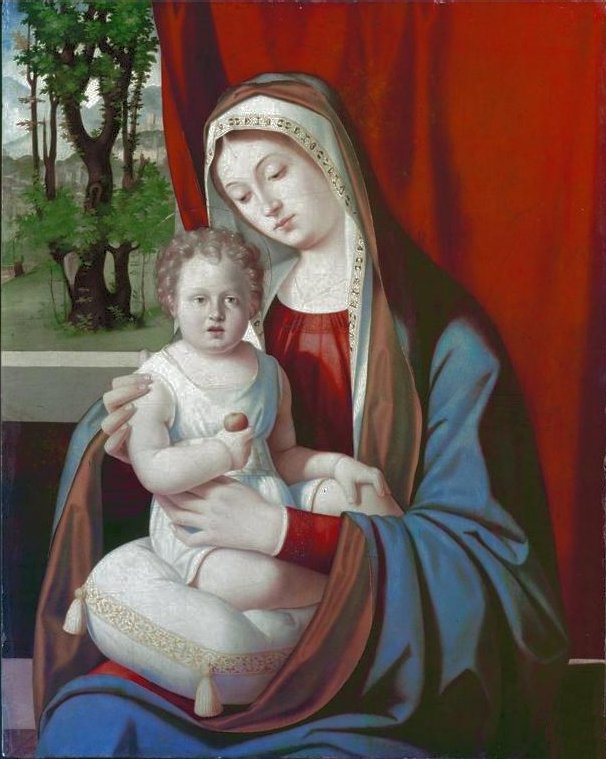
'Madonna and Child', painting by Andrea Previtali, c. 1515, El Paso Museum of Art